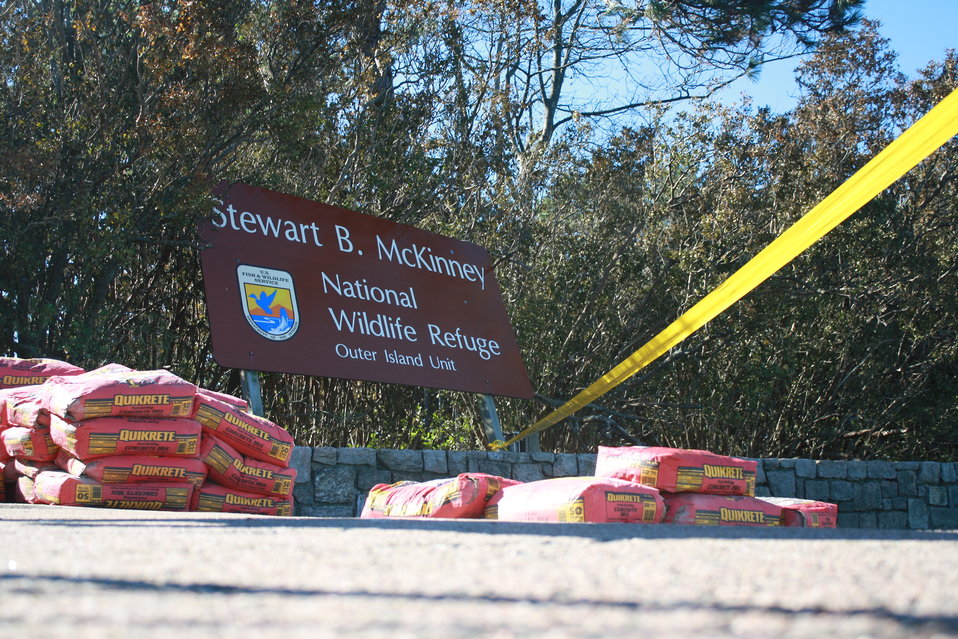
Damage at Stewart B. McKinney National Wildlife Refuge (CT)

The refuge's Outer Island was damaged after Hurricane Sandy.